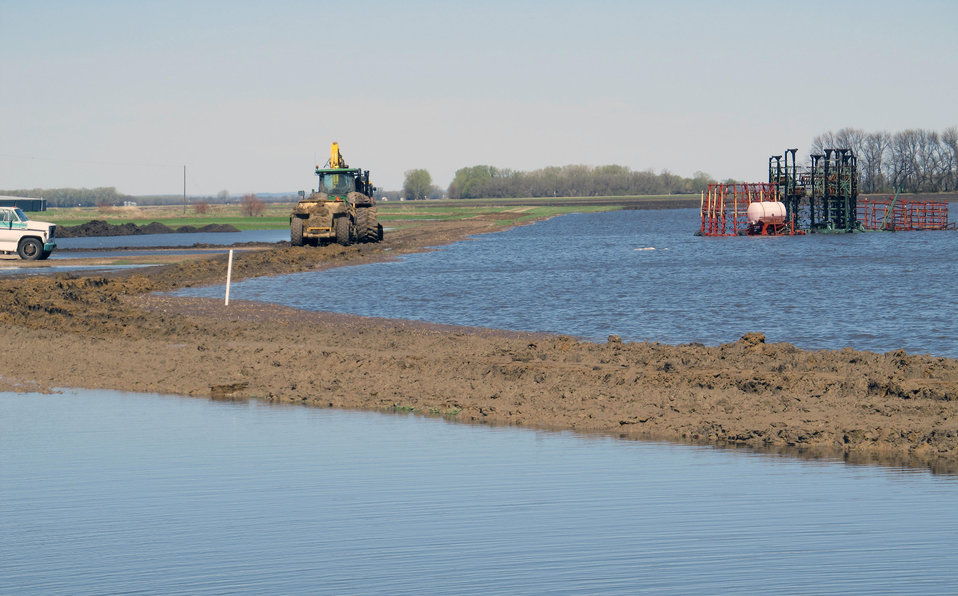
Flooding and water damage in the Park and Tongue River Watersheds located in Cavalier, Pembina and Cavalaier Counties in ND on Thursday, May 23, 2013.